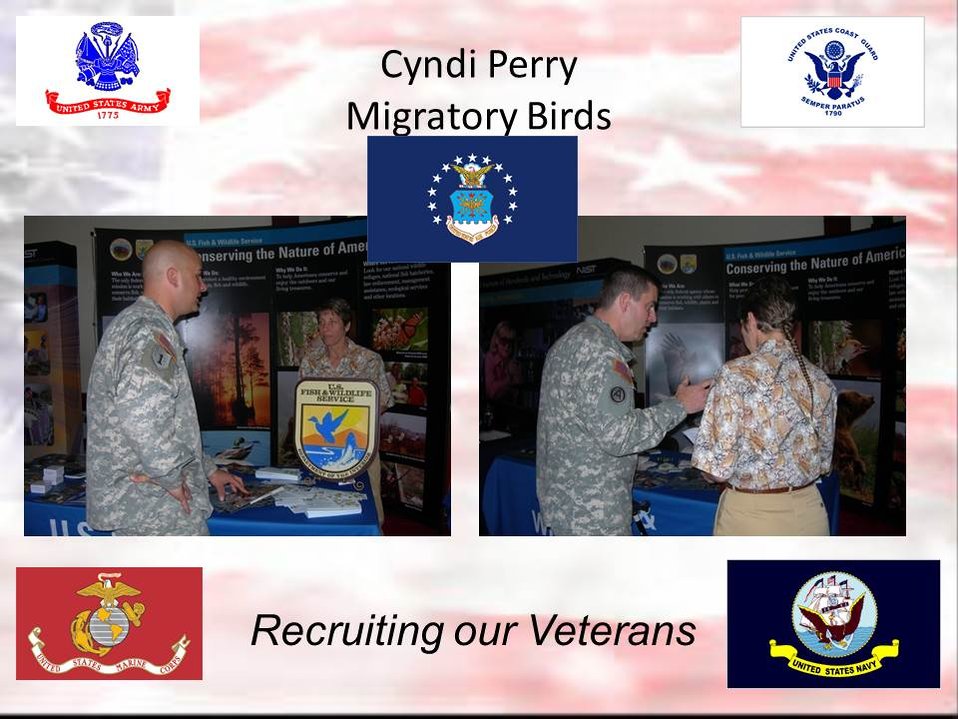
Recruiting our Veterans